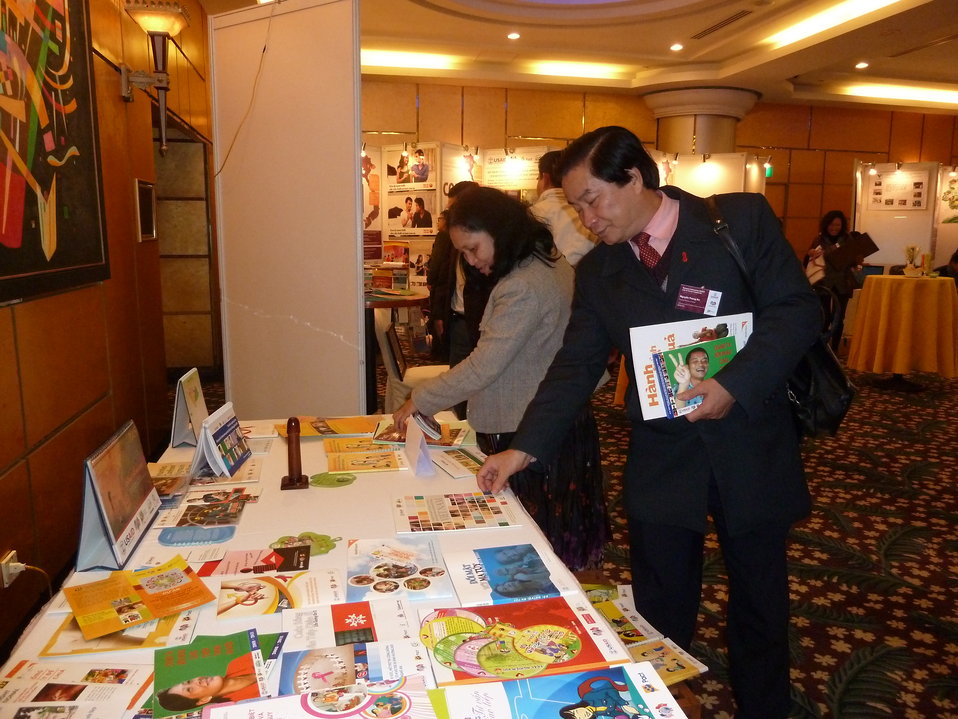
Implementing partners display their materials at the Community REACH workshop

Community REACH project close-out with USAID and implementing partner, Pact